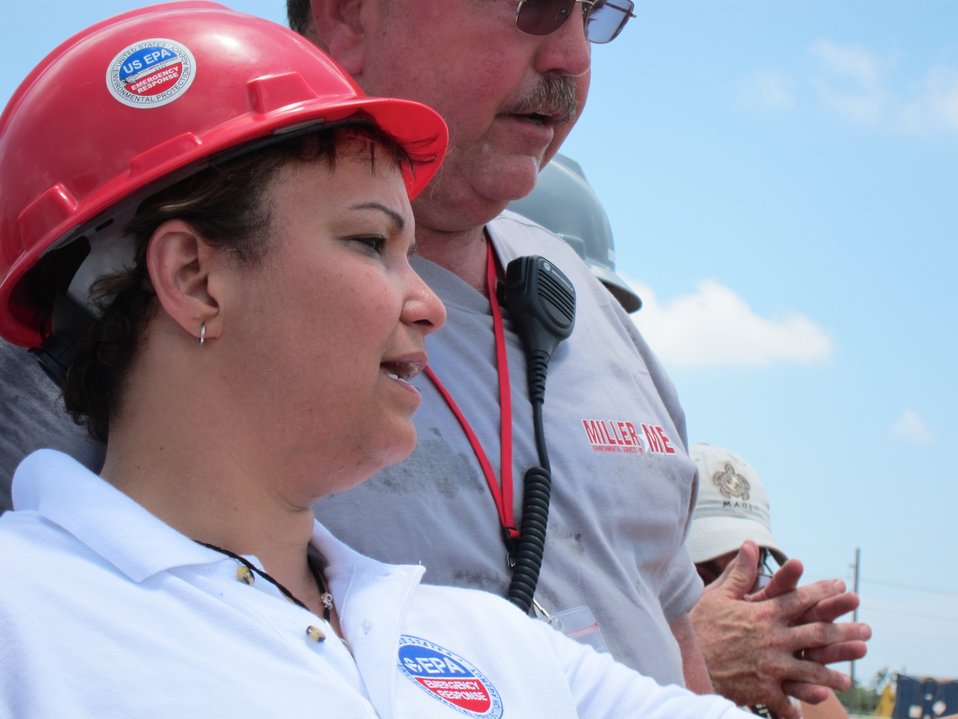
EPA Administrator Jackson at Grand Isle

June 11, 2010 - EPA Administrator Lisa P. Jackson at Grand Isle, Louisiana.